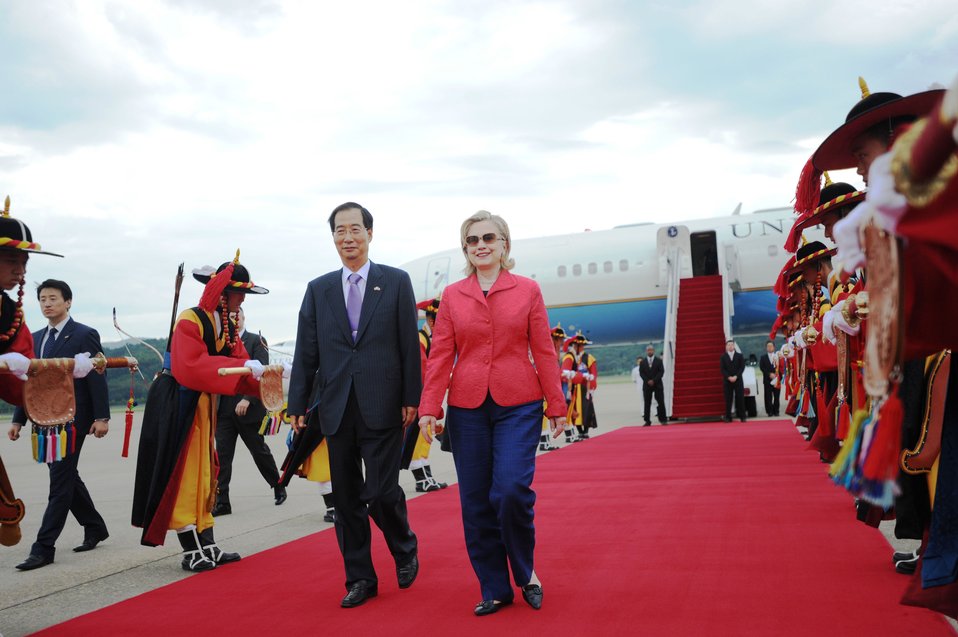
Secretary Clinton Is Escorted By Republic of Korea Ambassador to the U.S. Han Duck-soo

U.S. Secretary of State Hillary Rodham Clinton is escorted by Republic of Korea Ambassador to the United States Han Duck-soo upon her arrival in Seoul, South Korea, on July 21, 2010.